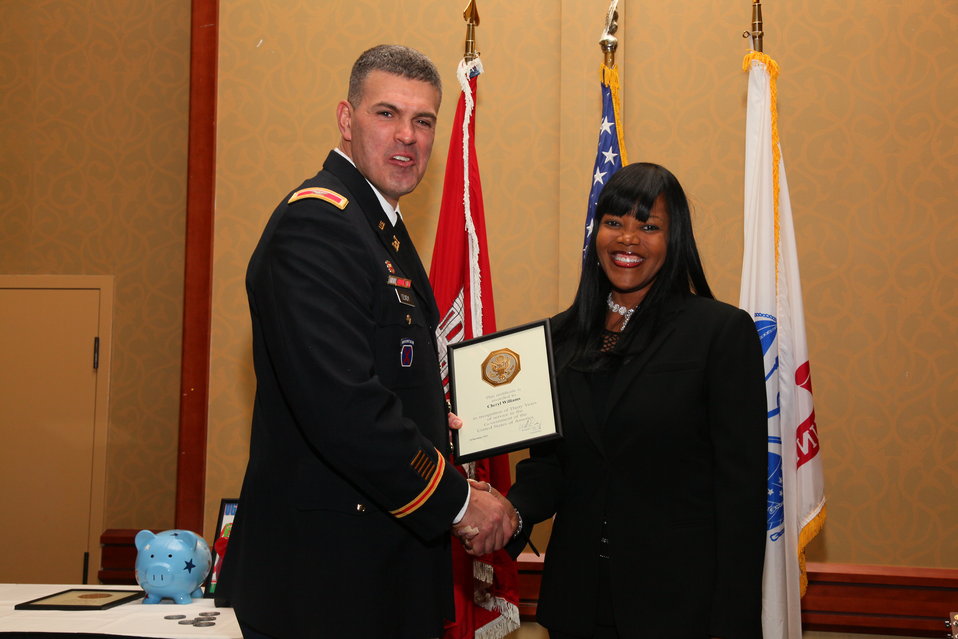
Sacramento District Holiday Party 2011